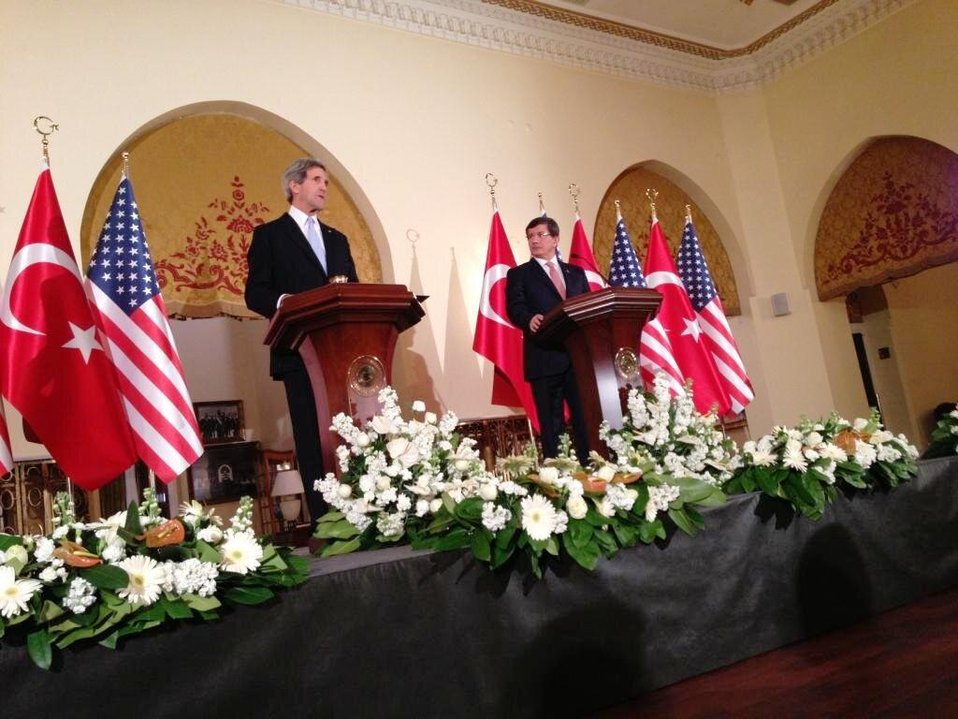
Secretary Kerry and Turkish Foreign Minister Davutoglu Address Reporters

U.S. Secretary of State John Kerry holds a joint press conference with Turkish Foreign Minister Ahmet Davutoglu in Ankara, Turkey, on March 1, 2013.